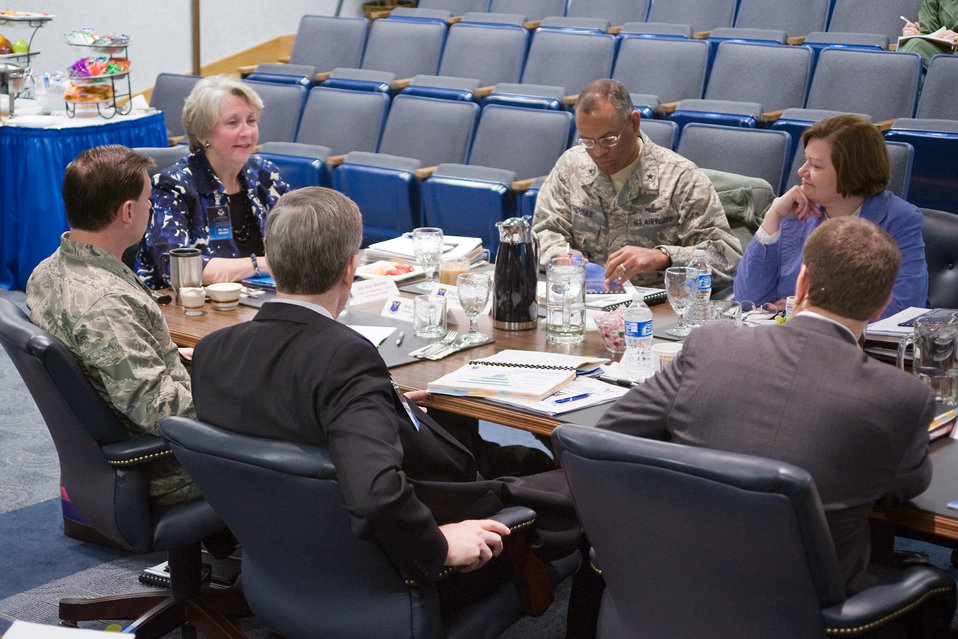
Malmstrom hosts inaugural ICBM Sustainment General Officer Steering Group

More than 20 key leadership members of the nuclear enterprise gathered to attend a steering group meeting chaired by Ann Mitchell pictured at the head of the table April 8, 2010, at Malmstrom Air Force Base, Mont. Ms. Mitchell is the director of the logistics, installations and mission support for Air Force Global Strike Command.